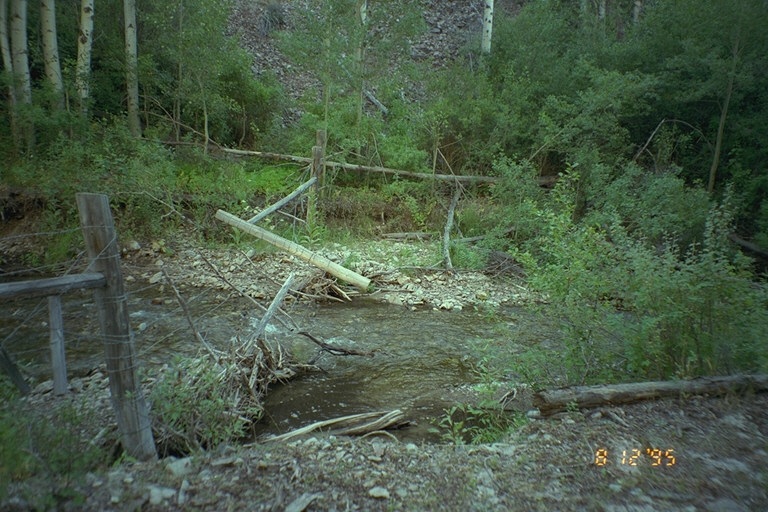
Riparian area Public Lands Salmon Field Office UCSC Upper Columbia Salmon Clearwater District